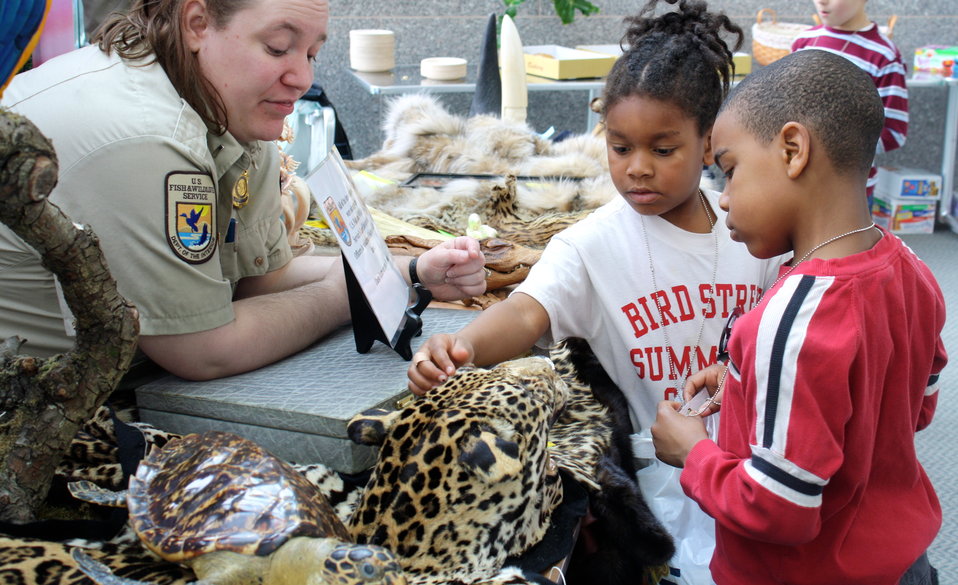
Kids Petting Cat Hide